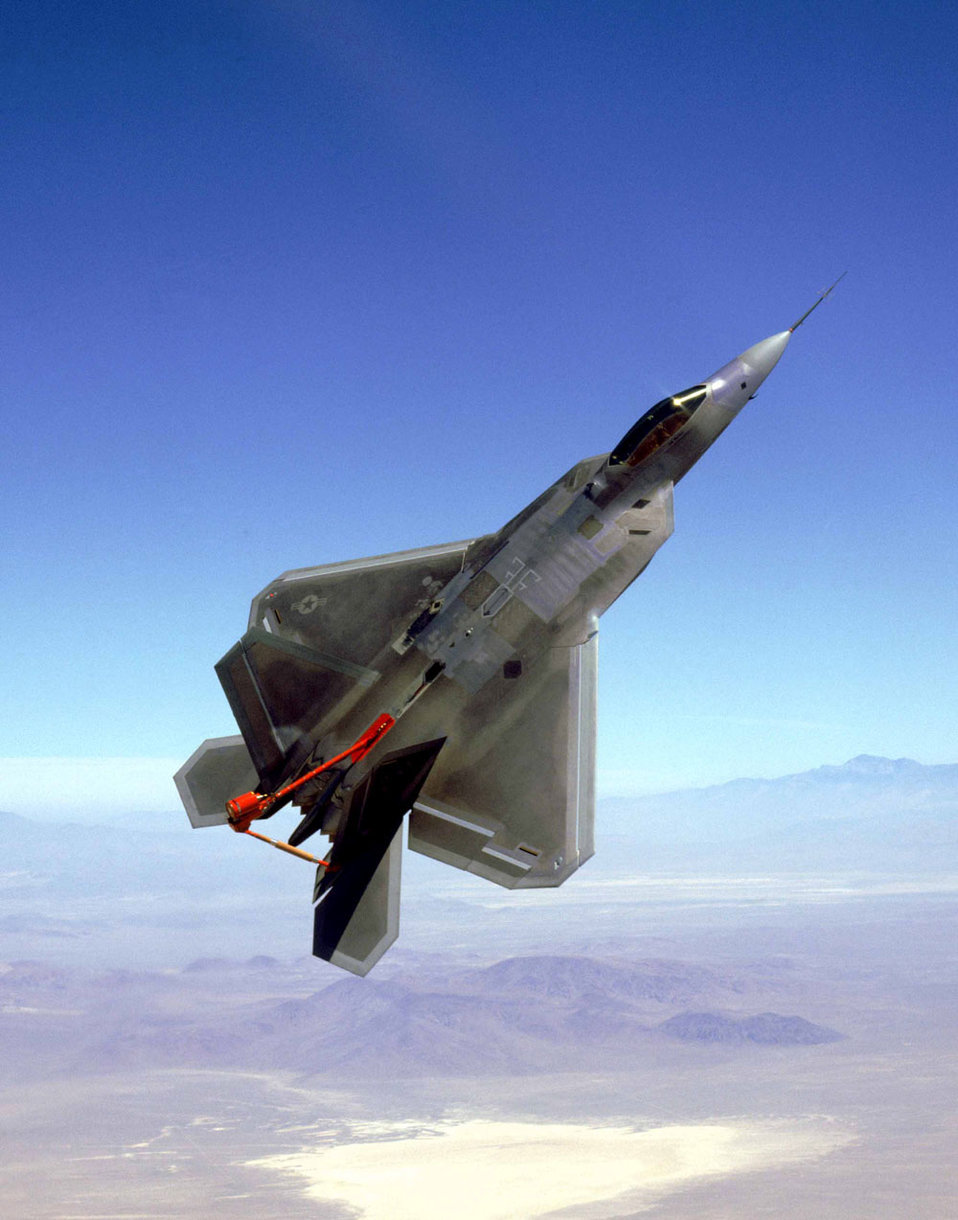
Angle of attack

EDWARDS AIR FORCE BASE, Calif. -- The Air Force's new air superiority fighter, the F/A-22 Raptor, flew in excess of 60 degrees angle of attack during flight testing here, reaching another milestone and satisfying another flight-test requirement mandated by the Department of Defense.